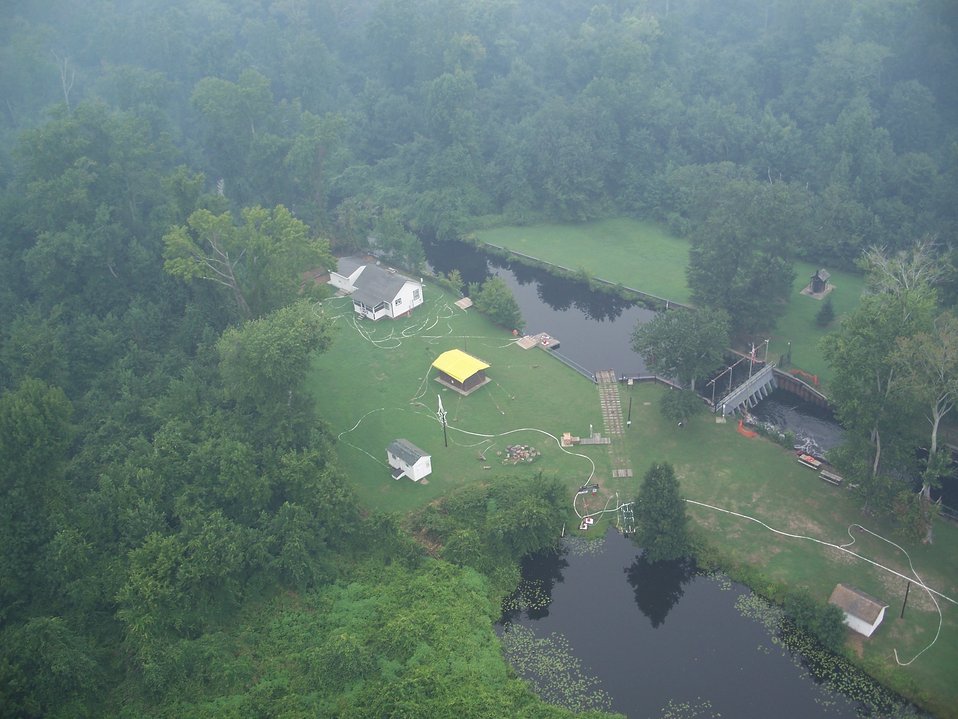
Structure protection Lake Drummond Reservation

Suffolk, VA, August 2011: Hoses making up a sprinkler system can be seen at the Lake Drummond Reservation along the Feeder Ditch off Lake Drummond on Great Dismal Swamp National Wildlife Refuge. The Lateral West wildfire threatened historical structues.